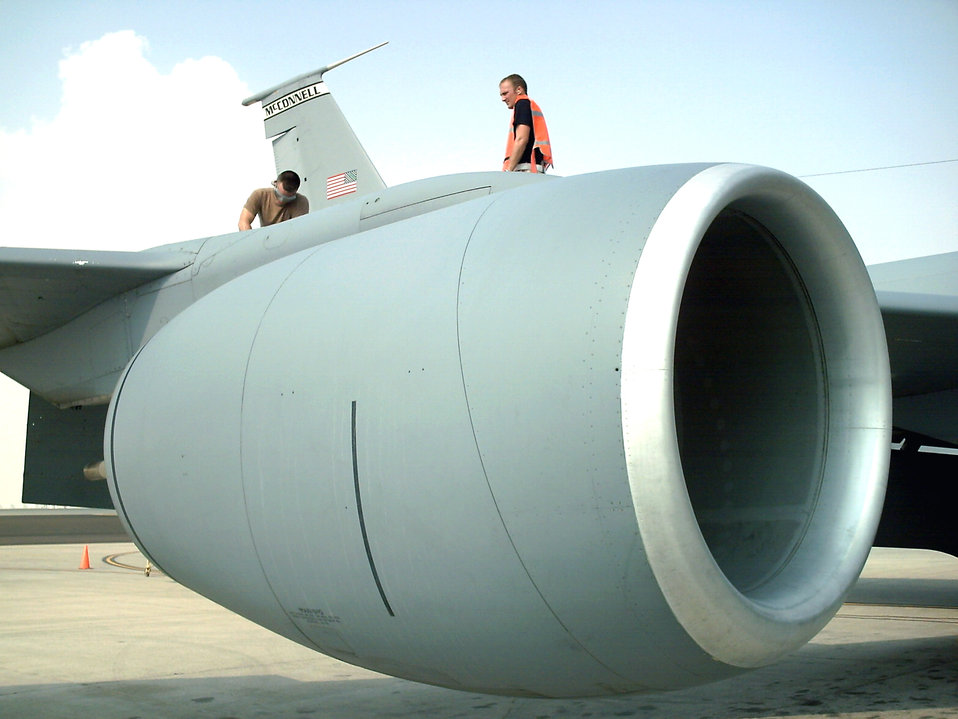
Fluid check

Senior Airmen James Seelye and Kevin Street service the hydraulic system of a KC-135 Stratotanker Sept. 28 at a forward-operating base in Southwest Asia. The Airmen work for the largest tanker unit in the area of responsibility, the 908th Expeditionary Air Refueling Squadron, assigned to the 380th Air Expeditionary Wing.